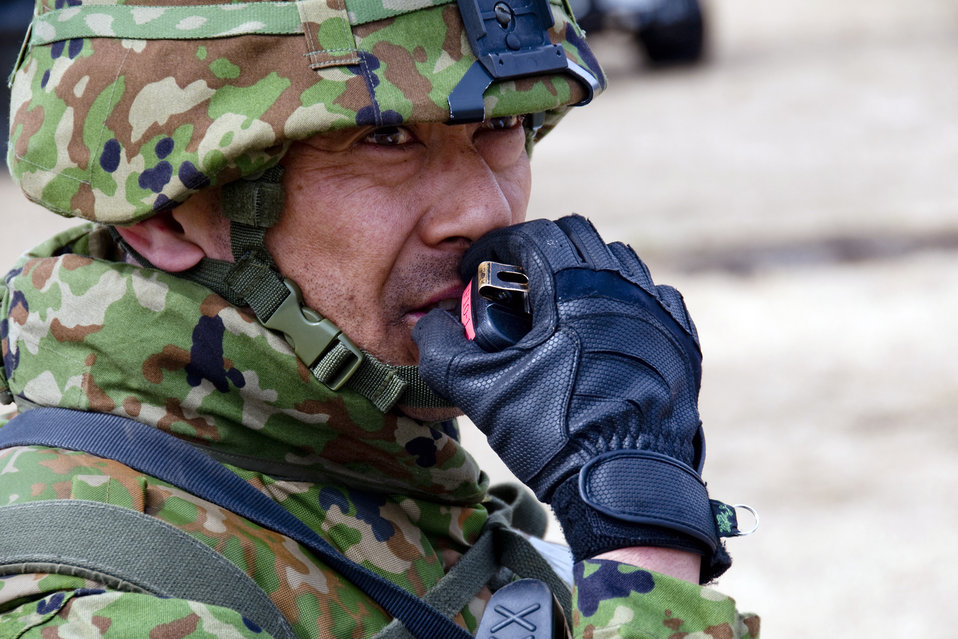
Japan, U.S. forces come together to Guard, Protect

Japan Ground Self-Defense Force 2nd Lt. Fumiko Aizu relays instructions to his troops over a radio during Exercise Guard and Protect March 13 at Misawa Air Base, Japan. The exercise brought together members of the JGSDF, Japan Air Self Defense Force, and the U.S. Air Force to practice defending Misawa Air Base against potential threats.